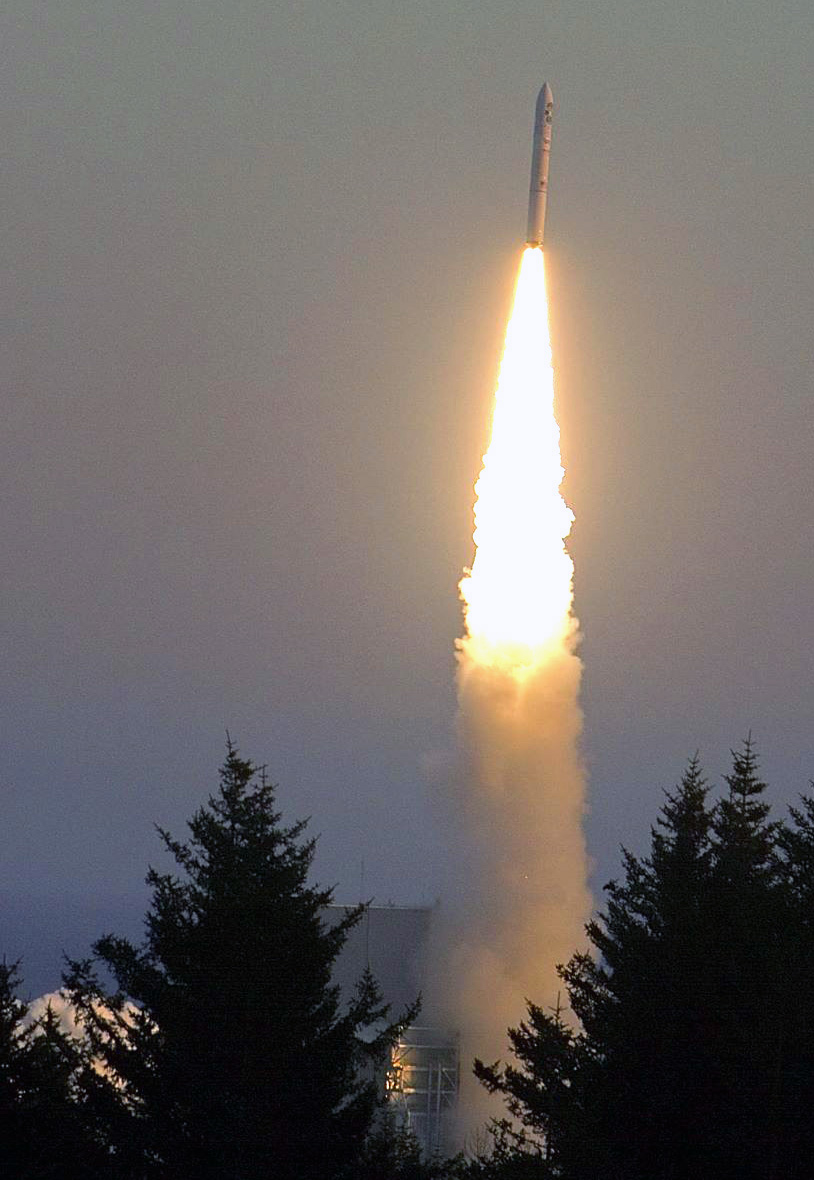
FalconSAT-5 rockets into orbit

A rocket carrying the Air Force Academy's FalconSAT-5 satellite lifts off Nov. 19, 2010, from the Kodiak Launch Complex in Alaska. FalconSAT is a capstone program that allows Academy cadets to design, build, test and operate a satellite. FalconSAT-5 carried Space Test Program payloads to measure measure the ionosphere and its effects on radio frequency signals.